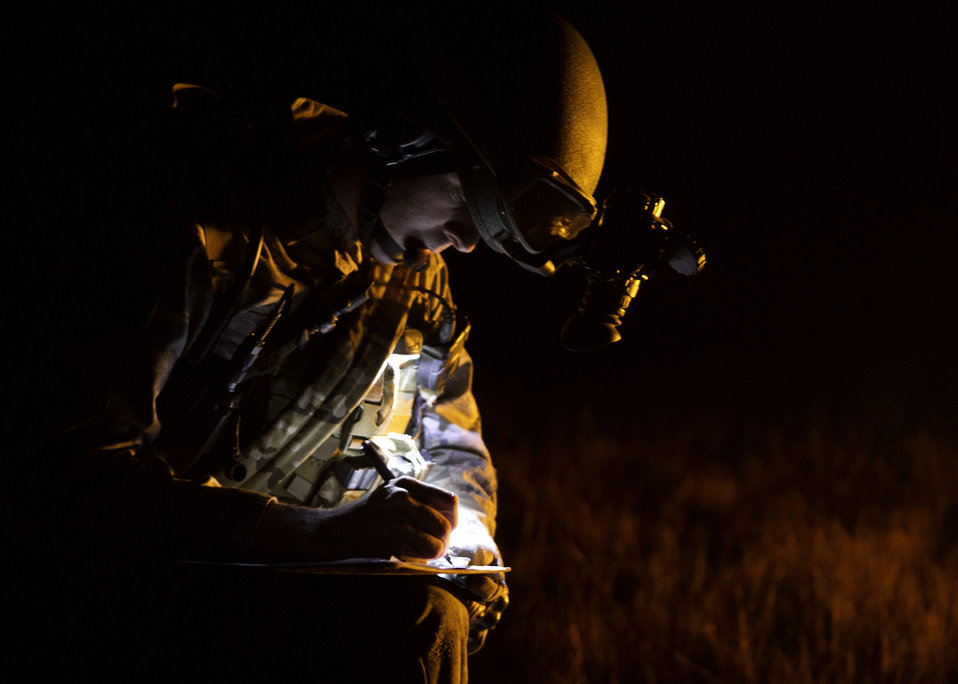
Taking notes

An Airman from the 1st Special Operations Security Forces Squadron writes down information while working a simulated burning vehicle scenario March 9, 2011, during Emerald Warrior at Eglin Air Force Base, Fla.